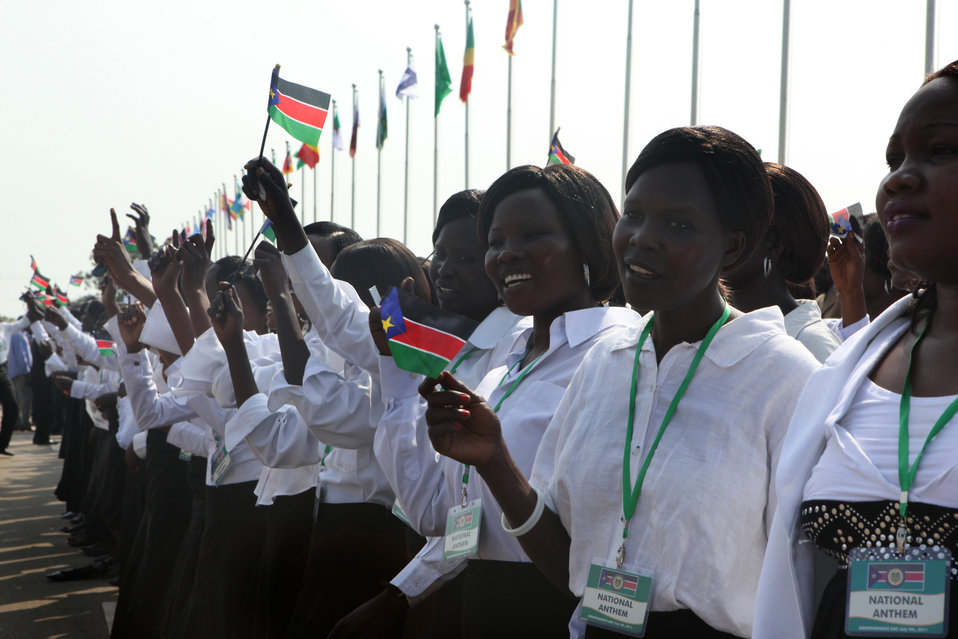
South Sudan Independence Day

National anthem singers at the Dr. John Garang Memorial site in Juba, South Sudan on July 9, 2011.